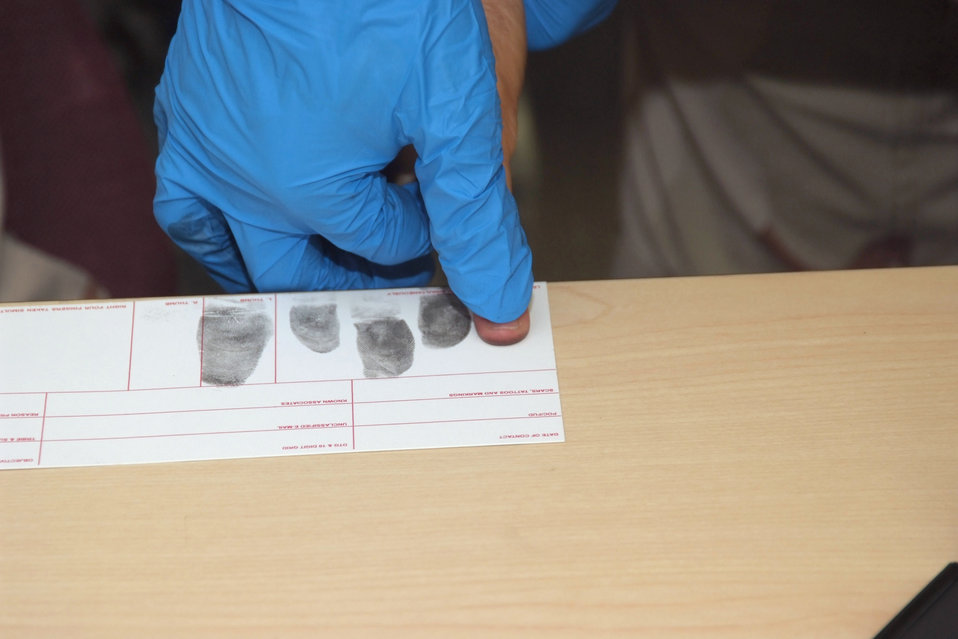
Battlefield Forensics Course 2010

A 4th Combat Camera Airman practices fingerprinting techniques during a battlefield forensics course at March Air Reserve Base, Calif.